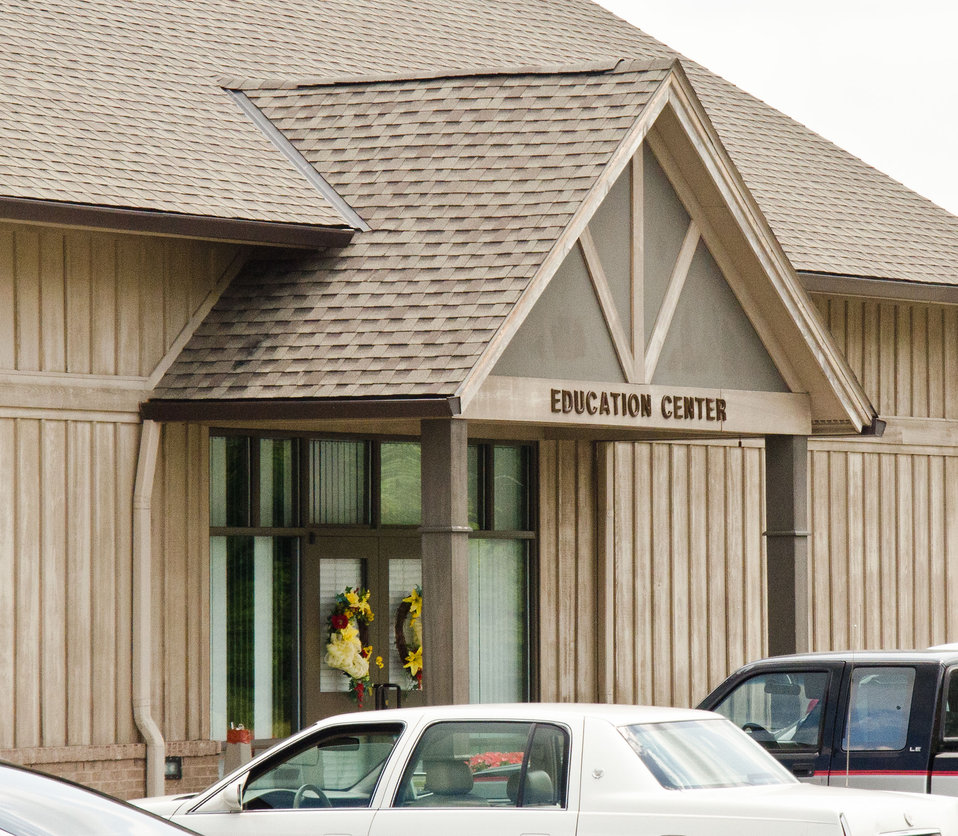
Education Center entrance to the Bath County Agricultural Education and Marketing Center, Owingsville, KY, on Friday, July 15, 2011. The Center was the recipient of a $400,000 Rural Business Enterprise Grant. It has given farmers and producers from Bath and surrounding counties the opportunity to manufacture and market their locally grown and locally produced value-added and “Kentucky Proud” branded products, including but not limited to, fresh produce, artisan crafts and specialty food products. The Center is open year-round and allow residents to sell products in four different retail categories, including Kentucky products, regional crafts, “green” groceries and bakery/deli. Several producers expressed their gratitude for Rural Development’s assistance in making the center a reality. The project was made possible through American Recovery and Reinvestment Act of 2009 funding enacted by the 111th United States Congress in February 2009 and signed into law on February 17, 2009, by President Barack Obama.